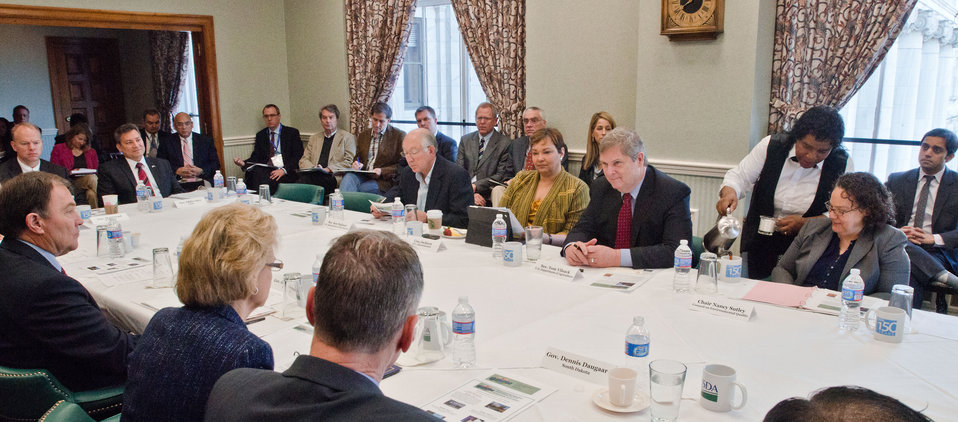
Agriculture Secretary Tom Vilsack (fourth from right in foreground) listens to Western Governors Association Chairperson Washington Governor Chris Gregoire (second from left) during a breakfast he hosted for Western Governors and Federal Officials, in the Lincoln Room at the United States Department of Agriculture headquarters, in Washington, D.C., on Sunday, February 26, 2012.